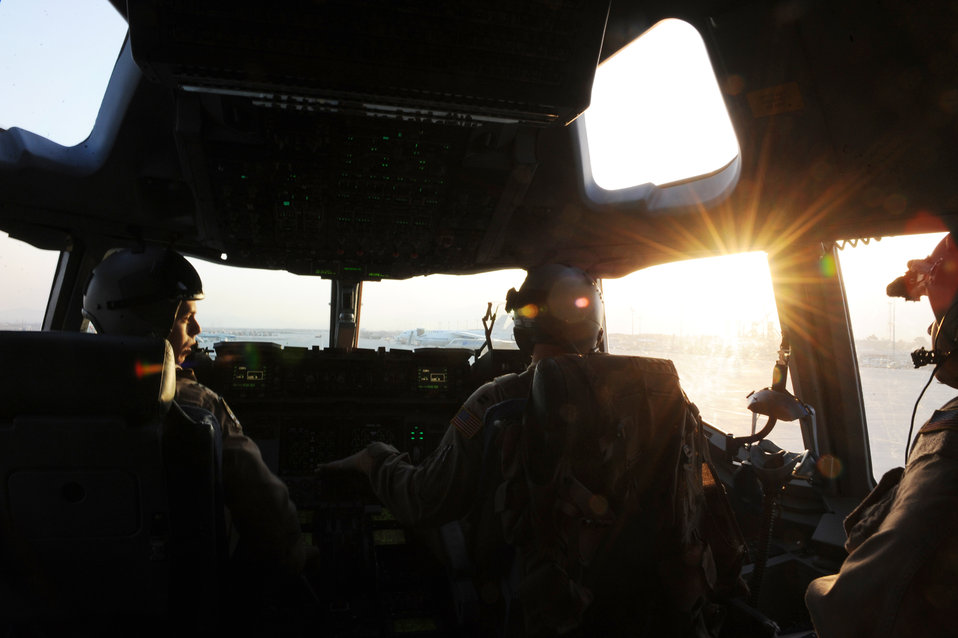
Combat air delivery over Afghanistan

Capt. Brian D. Phillips (left), Capt. Marcus F. Youngquist and Capt. Gabriel Chavarria park a C-17 at Bagram Air Base, Afghanistan, Feb. 1, 2010. The C-17 is equipped with two heads-up displays allowing pilots to fly their planned approach with their heads up, looking out of the cockpit by superimposing the necessary cues on their outside field of view. All of them are C-17 Globemaster III pilots assigned to the 816th Expeditionary Airlift Squadron.